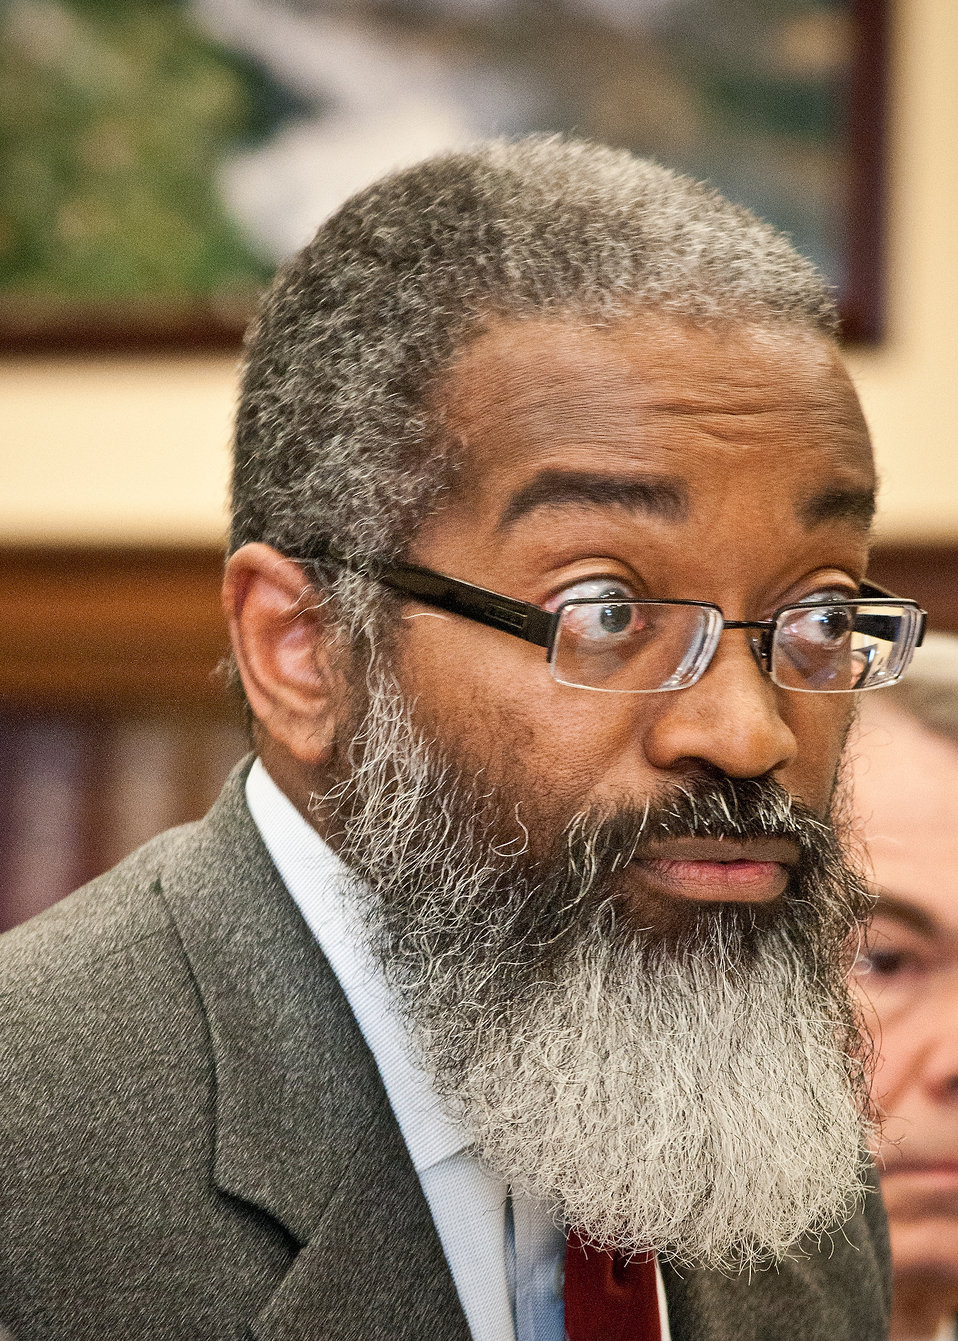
Dr. Gregory Parham, Administrator, Animal and Plant Health Inspection Service listens to questions while testifying on Capitol Hill with Ed Avalos, Undersecretary Marketing and Regulatory Programs and representatives of the Marketing and Regulatory Program agencies before the House Agriculture Appropriations Subcommittee on the agencies fiscal year 2013 budget requests in Washington, D.C., Tuesday, March 6, 2012.